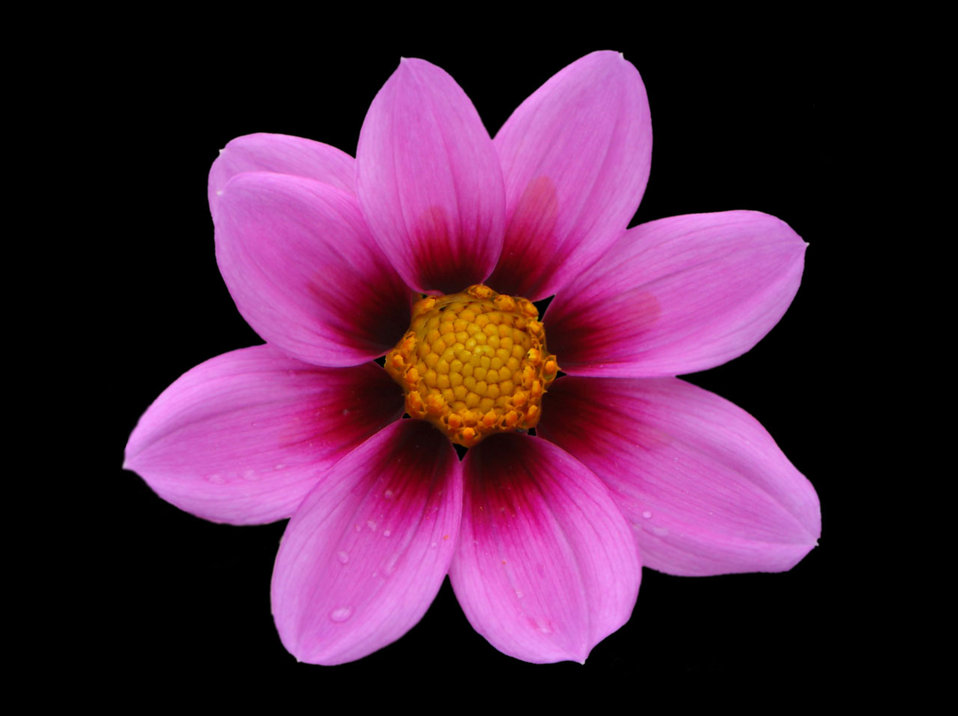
Northwest cosmos on black..